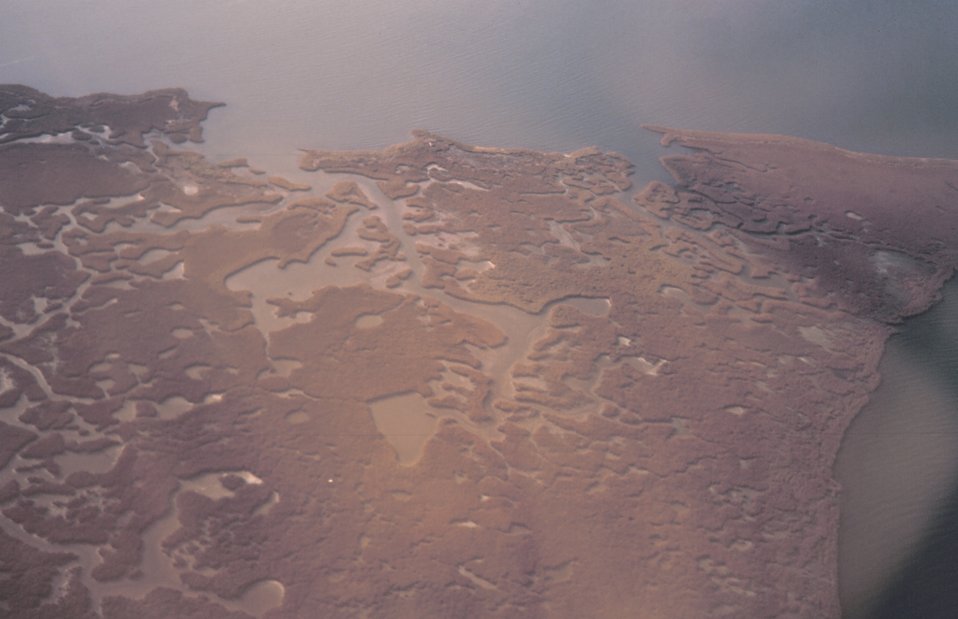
Aerial view of marsh land.